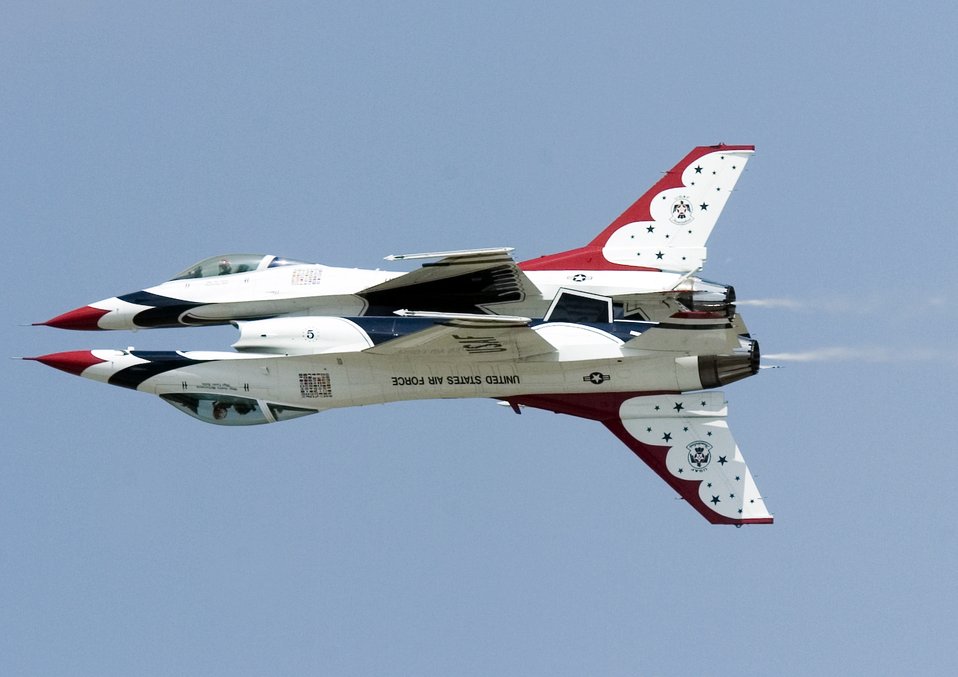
Air Force Week concludes in St. Louis

Thunderbirds No. 5 and 6 perform a reflection pass during a practice show at Scott Air Force Base, Ill., on Aug. 11.